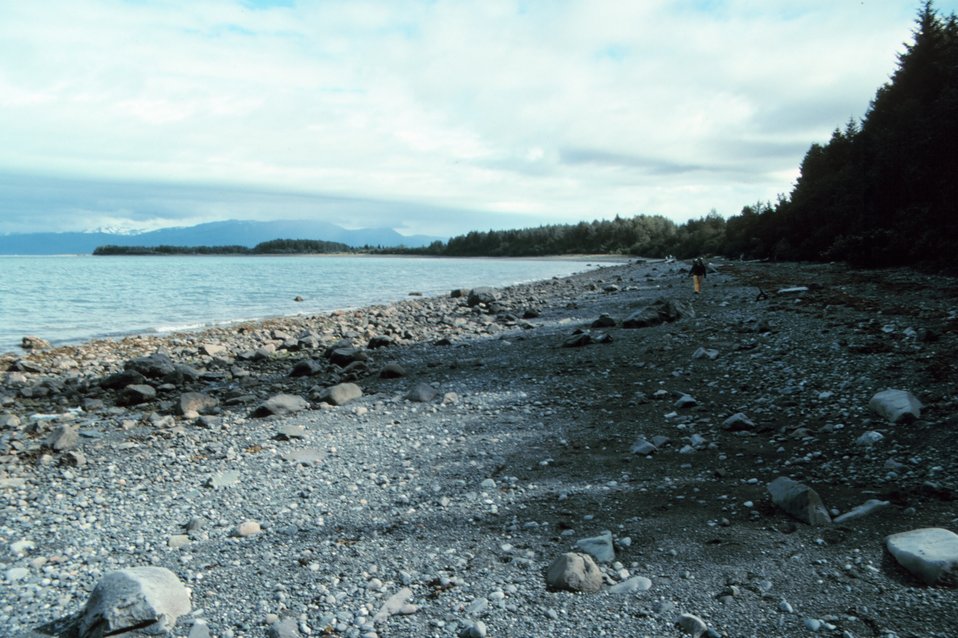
A beach of glacial debris in the Icy Bay area.